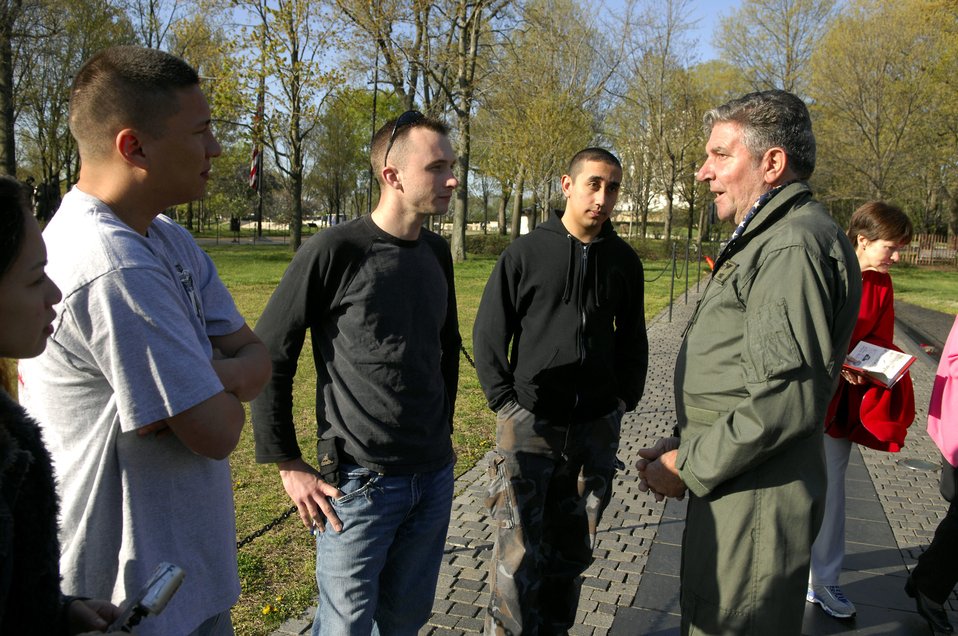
Cleaning the Wall

Lloyd McCabe (right) tells Airmen about his experiences in Hanoi at the Vietnam Memorial Wall in Washington, D.C., April 21. Members of the Air Force Sergeants Association, with volunteers from Charleston, Shaw, Pope, Seymour Johnson, Langley and Bolling Air Force Bases, were among those who helped clean the memorial.